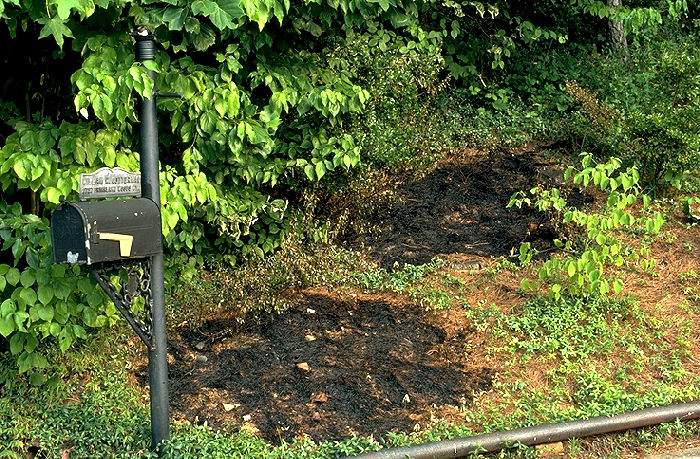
Twin burns on ground from lightning strike, Atlanta, Georgia.